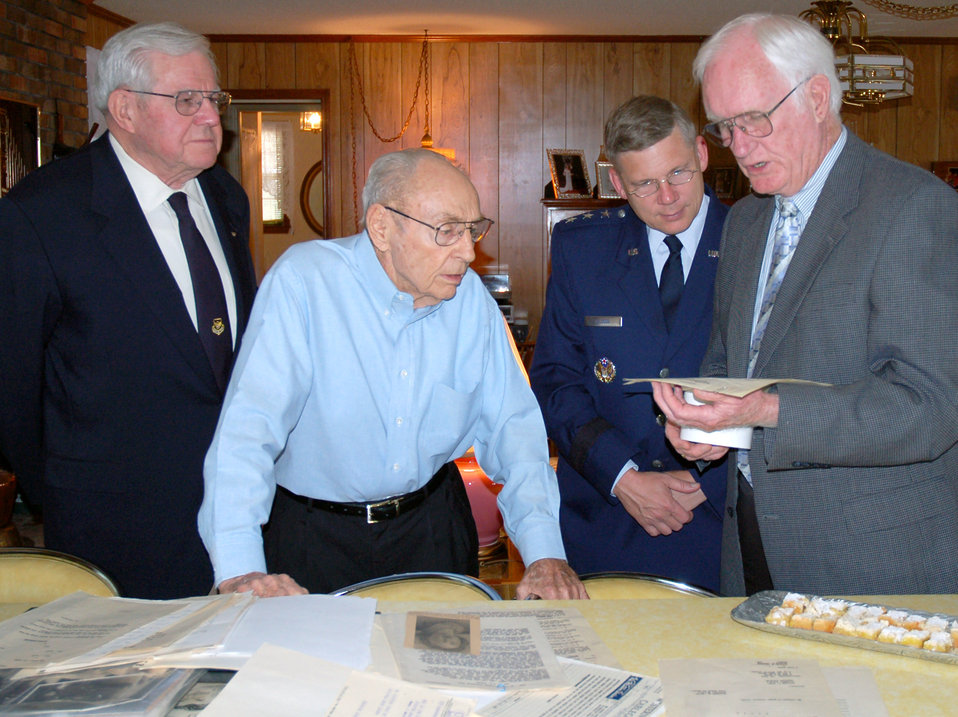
Retired Lt. Gen. E.G.